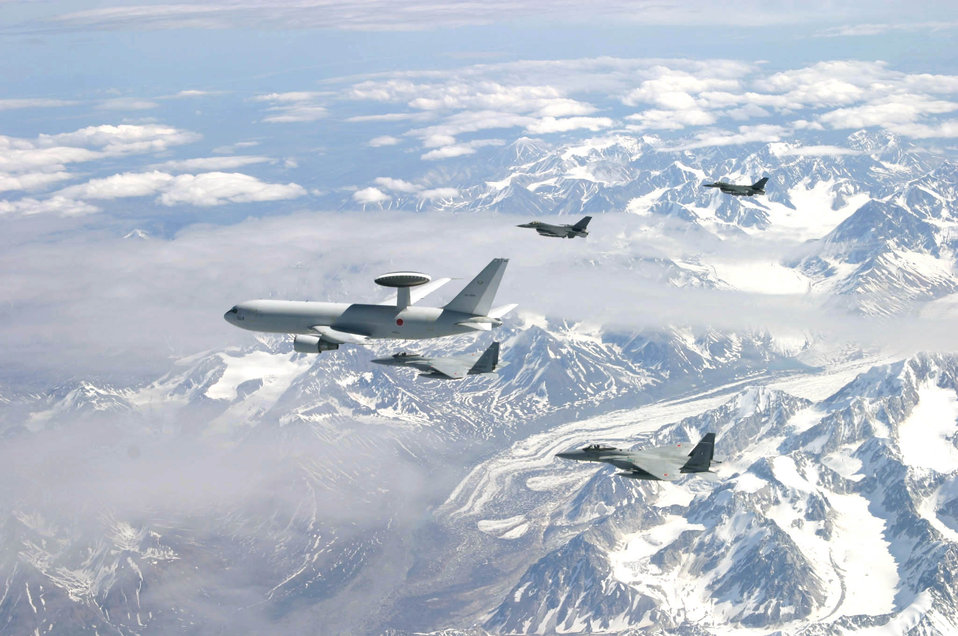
Cooperative flight

OVER ALASKA -- A formation of F-16 Fighting Falcons, Japanese F-15s and an E-767 airborne warning and control system participate in Cooperative Cope Thunder on June 10. This Pacific Air Forces-sponsored air combat training exercise takes place June 9 to 24 at Eielson and Elmendorf Air Force Bases in Alaska. Participants include people and aircraft from the United States, Japan, Germany, Singapore, Australia, Sri Lanka, Mongolia, Thailand, Bangladesh, South Korea and the United Kingdom.